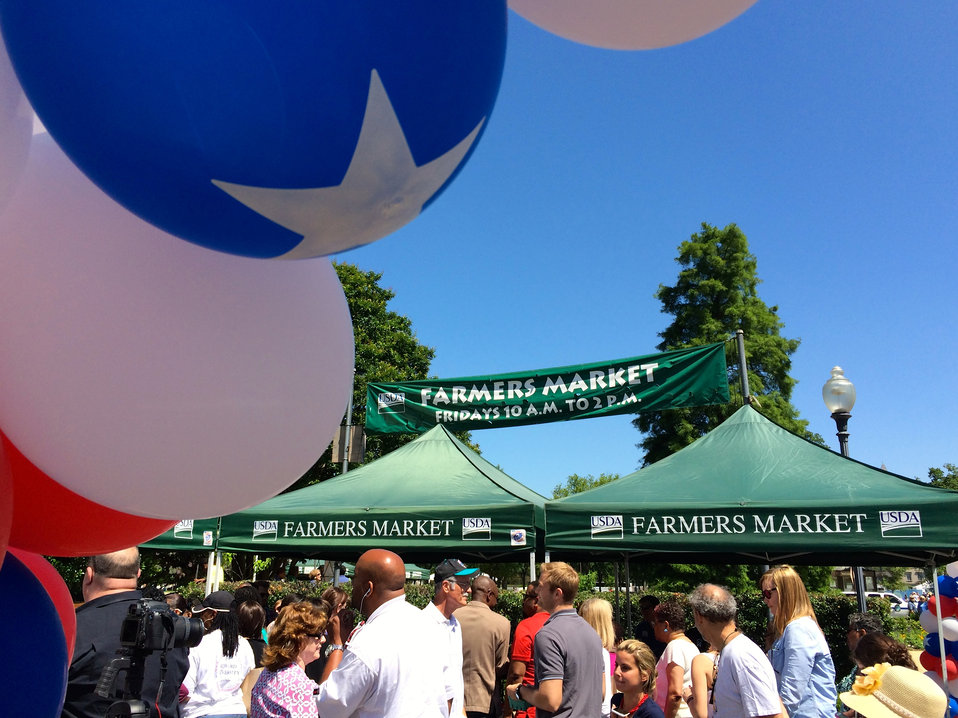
Red White and Blue Balloons at the Farmers Market

It was a lovely sunny day at the 19th season opening of the U.S. Department of Agriculture's (USDA) Farmers Market in the east parking lot of U.S. Department of Agriculture (USDA) on Friday, Jun. 6, 2014. USDA honored U.S. military service members, past and present, and American agriculture brought together special guests, partners, farmers and the community.